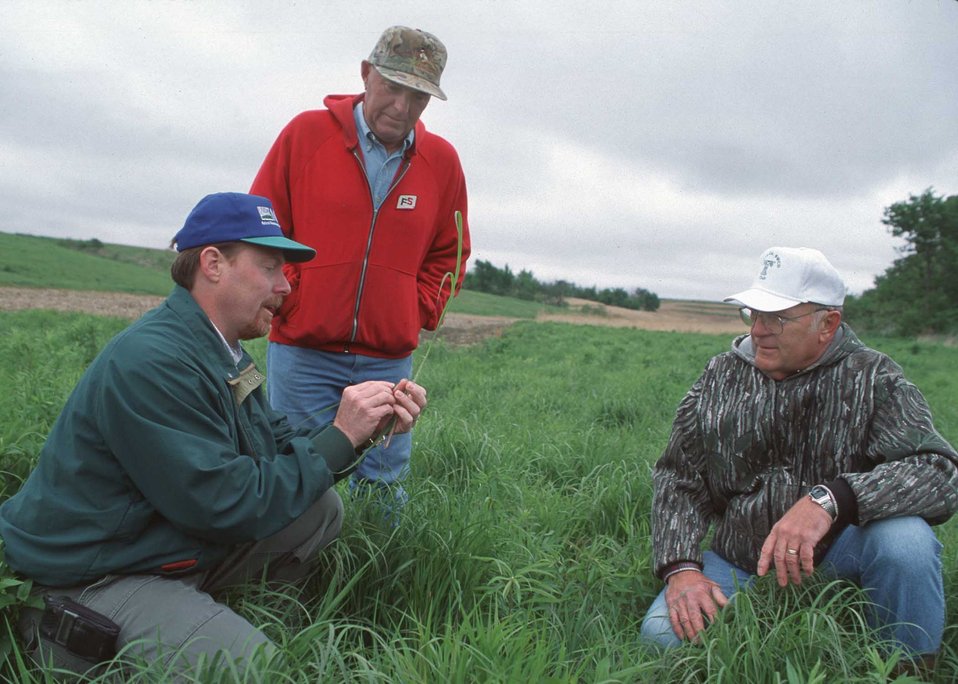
NRCS District Conservationist Jon Hubbert works with Peoria County, Illinois conservation farmers to check on the species thriving in a buffer strip one year after installation.